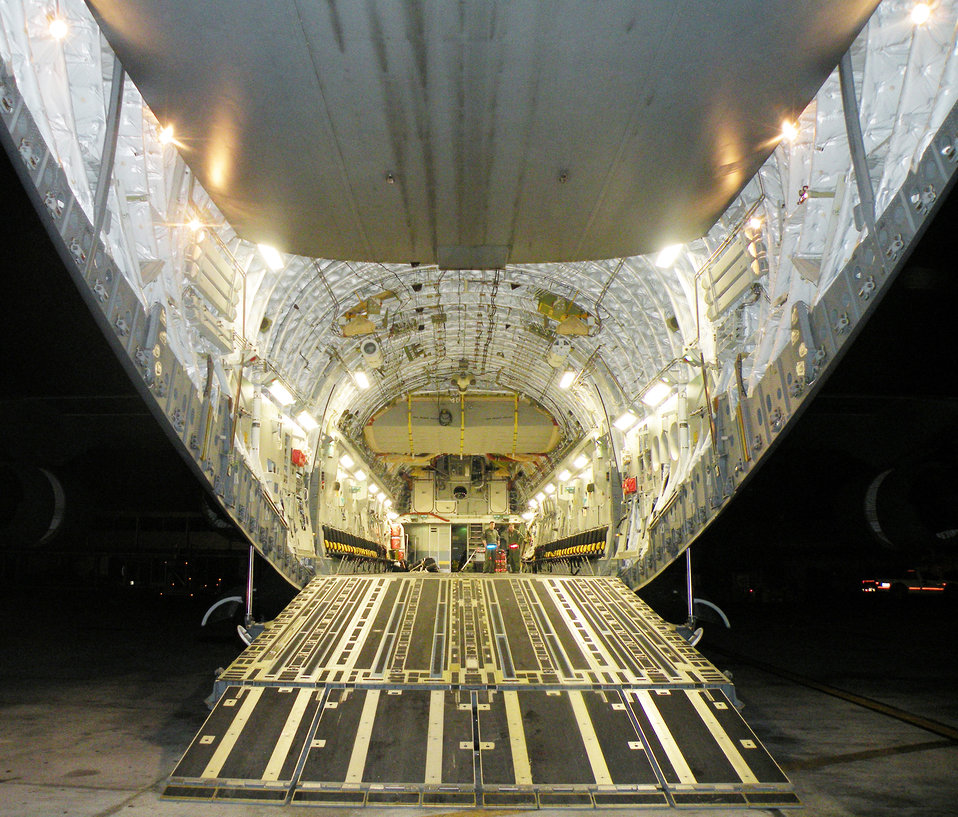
Total-force crews support Operation Unified Response in Haiti

Staff Sgts. Steve Pinkerton and Gus Morse stand inside a C-17 Globemaster III that just landed in Haiti in support of Operation Unified Response during the early morning hours of Jan. 22, 2010. Sergeants Pinkerton and Morse are 317th Airlift Squadron loadmasters from Charleston Air Force Base, S.C.